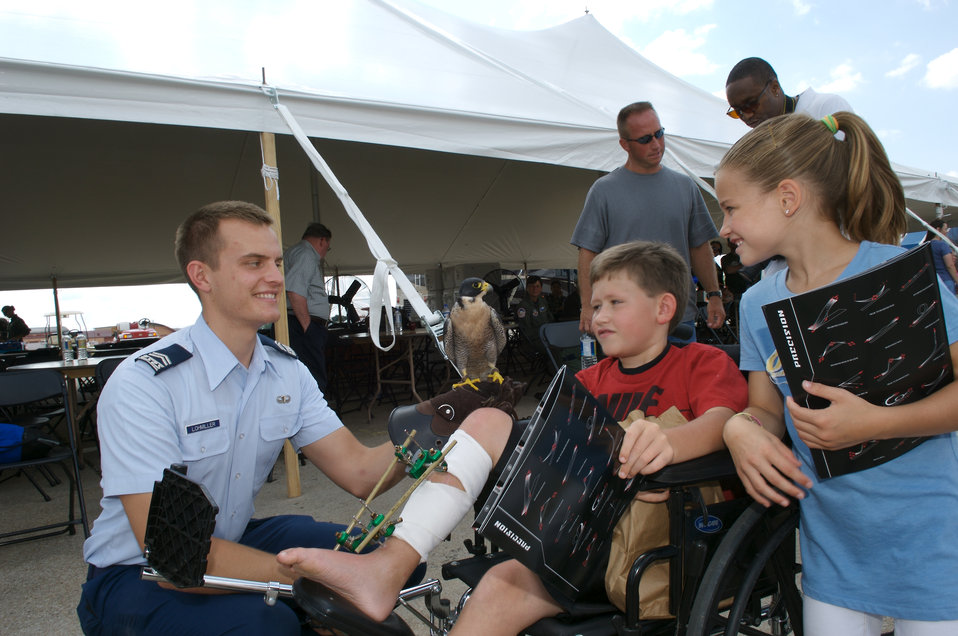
Offutt Airmen hold airshow

Cadet 2nd Class Corey Lohmiller and